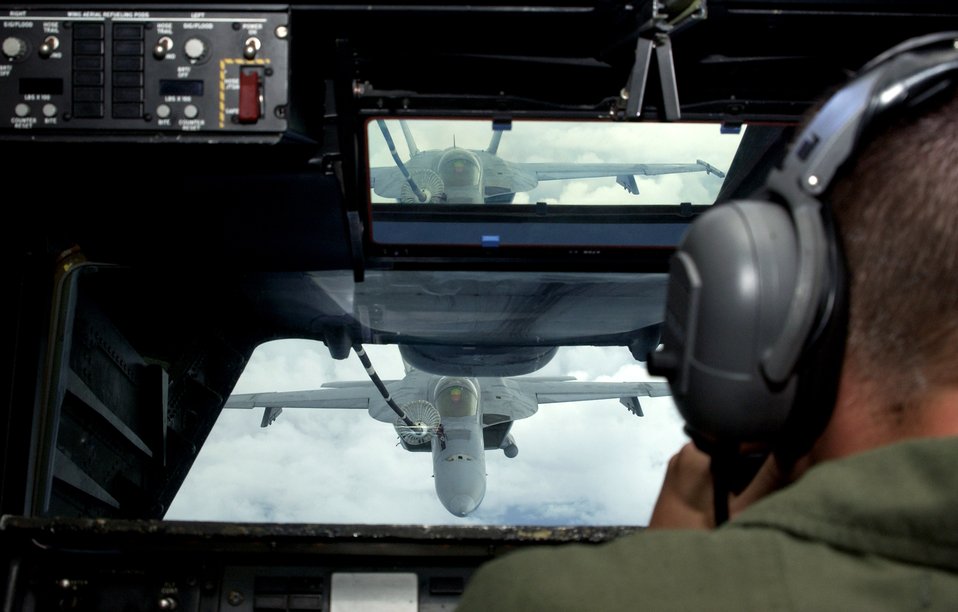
Joint operation

Staff Sgt. R. Tyler Stone refuels a Navy F-18 Hornet from a KC-10 Extender during Exercise Valiant Shield. The exercise exhibited U.S. capabilities and interoperability as a joint force. Sergeant Stone is with the 2nd Air Refueling Squadron at Andersen Air Force Base, Guam.